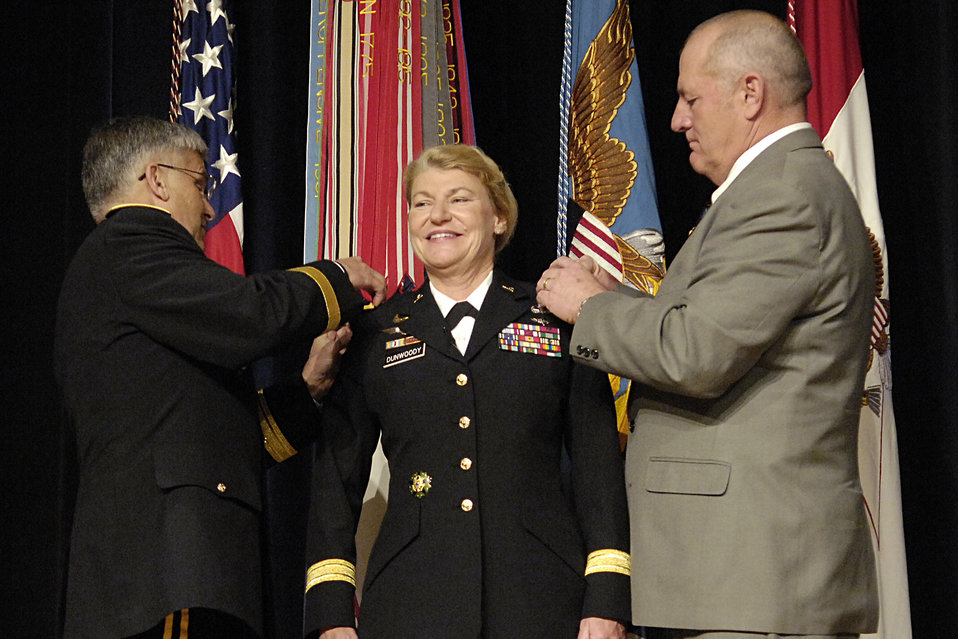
First female four-star general promoted

Army Lt. Gen. Ann E. Dunwoody smiles during her promotion to general. She was pinned by Chief of Staff of the Army General George W. Casey (left) and her husband Craig Brotchie during her ceremony Nov. 14 at the Pentagon. General Dunwoody made history as the nation's first four-star female officer.